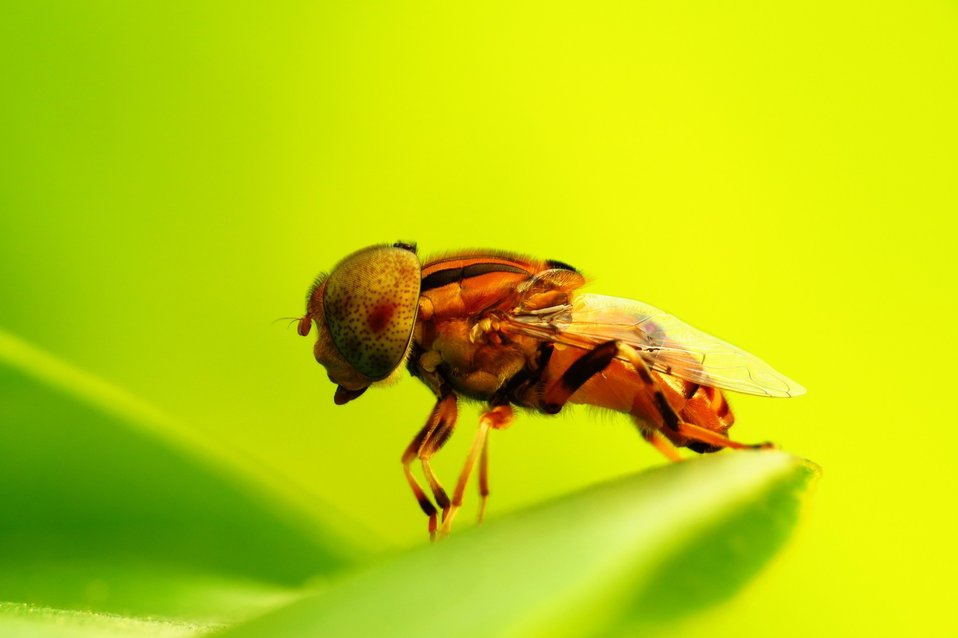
Close up yellow fly on a leaf

Beautiful yellow fly alighted on the green leaf.